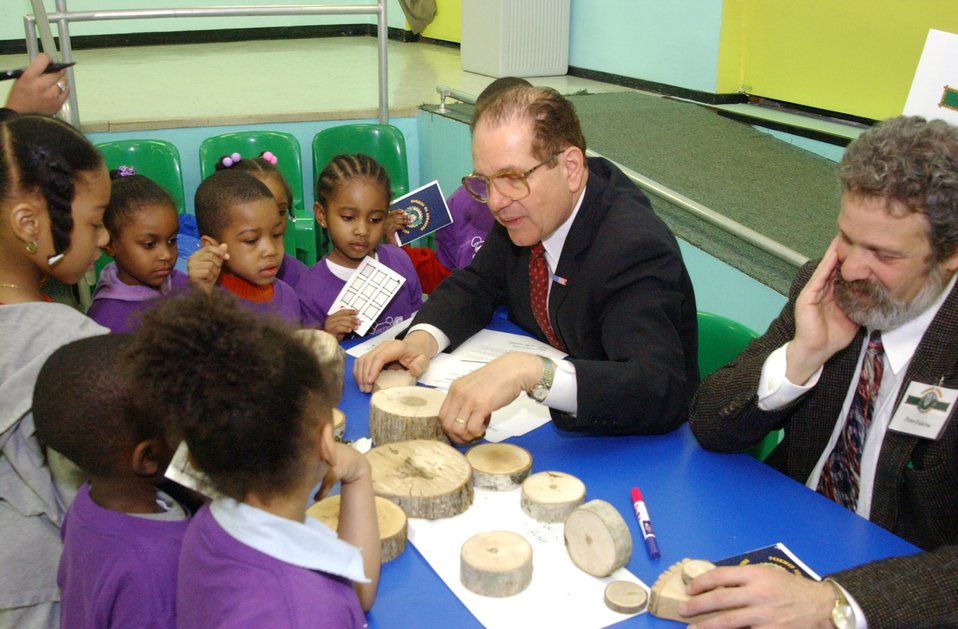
DR. RAYMOND ORBACH, DOE DIRECTOR, OFFICE OF SCIENCE EXPLAINING THE RAIN FOREST TREE MEASURING EXHIBIT TO ELEMENTARY SCHOOL STUDENTS.

DR. ORBACH AND PETER FALETRA DOE'S SENIOR TECHNICAL ADVISOR FOR SCIENCE EDUCATION PARTICIPATED IN THE SCIENCE SAFARI AT THE CAPITAL CHILDREN'S MUSEUM ON MARCH 20, 2003. SEVERAL ELEMENTARY SCHOOLS FROM WASHINGTON D.C. ATTENDED AS PART OF THE EXCELLENCE IN SCIENCE, TECHNOLOGY AND MATHEMATICS EDUCATION WEEK. DOE'S OFFICE OF WORKFORCE DEVELOPMENT FOR TEACHERS AND STUDENTS ORGANIZED THE SCIENCE SAFARI AS A PUBLIC/PRIVATE/NONPROFIT EFFORT.